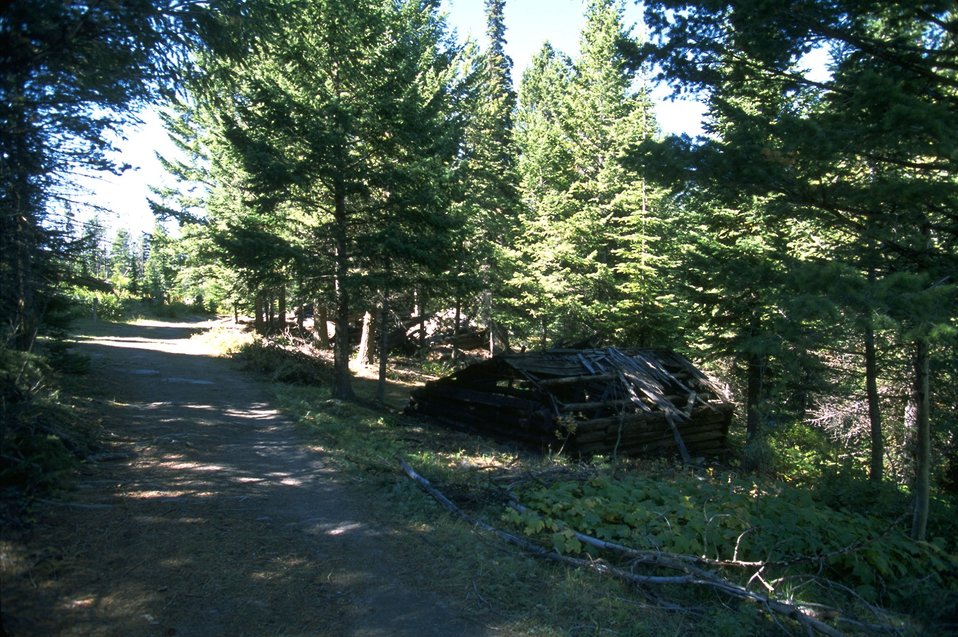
Old cabin in Coloma